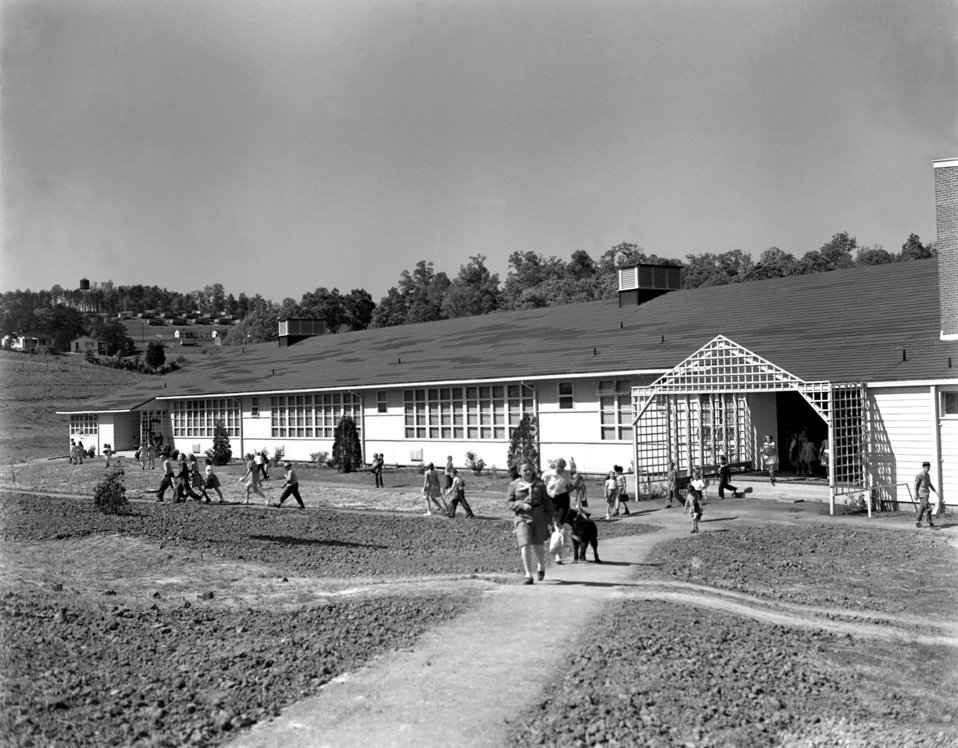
Pine Valley School Oak Ridge 1947

DOE photo Ed Westcott 5-13-1947 Oak Ridge Tennessee